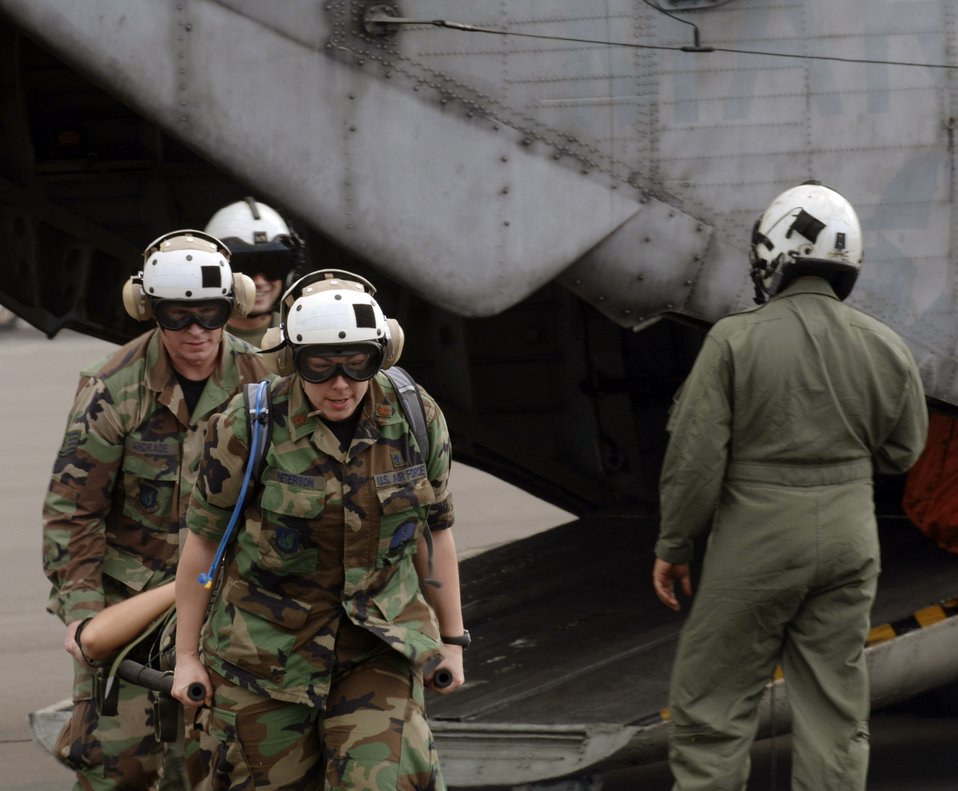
Practice makes perfect

Airmen from the 3rd Expeditionary Medical Squadron at Elmendorf Air Force Base, Alaska, hone their helicopter evacuation skills during a Pacific Lifeline training exercise Jan. 30 at the Kona International Airport, Kona, Hawaii. The exercise provides training for humanitarian and disaster relief assistance.